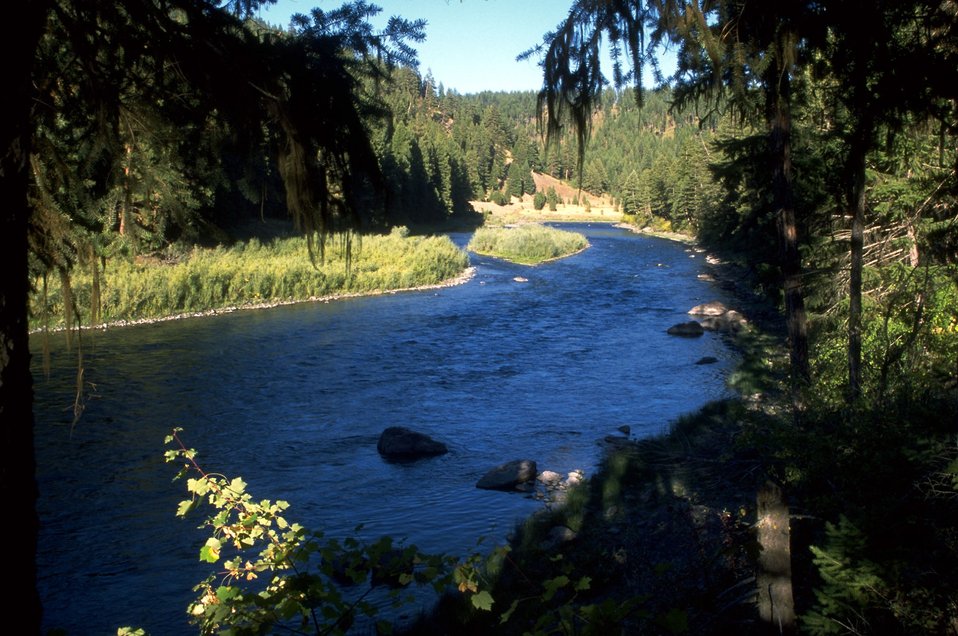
Blackfoot River